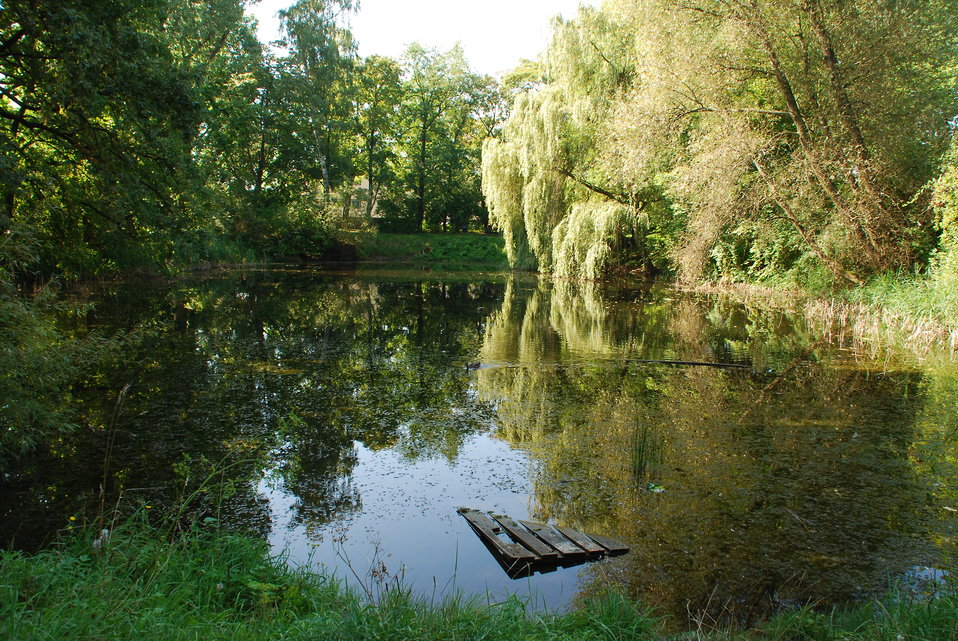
Deutsch: Theaterteich in Frankfurt (Oder), am ehemaligen Kleist-Theater, Friedrich-Ebert-Straße Theatre pond near the former Kleist Theatre at street Friedrich-Ebert-Strasse in Frankfurt (Oder), Brandenburg, Germany